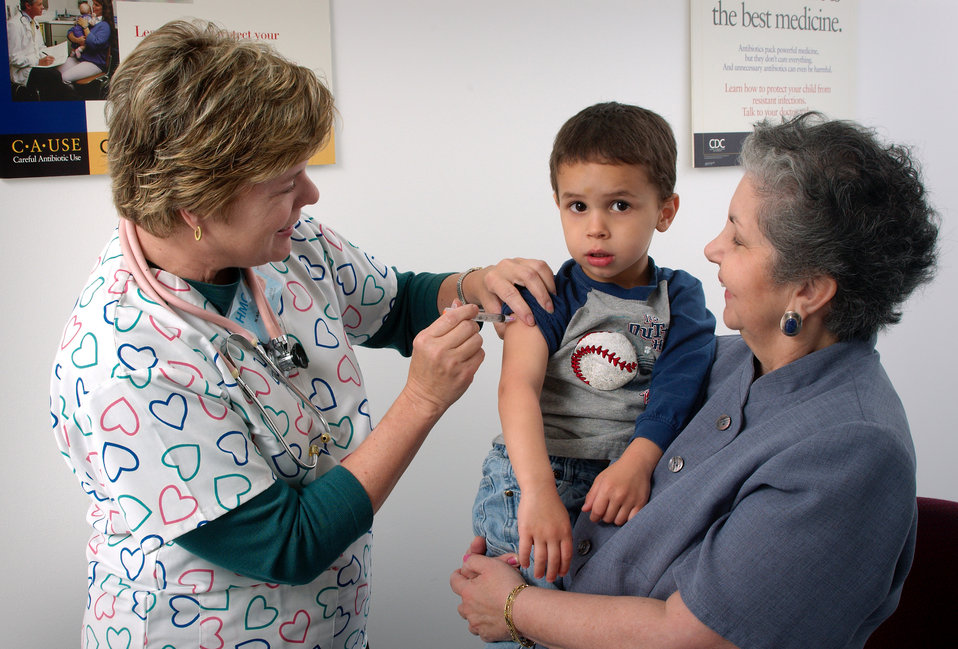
The 3-year old boy shown in this 2006 image, as well as PHIL 9299 and 9304, was receiving an immunization injection in his right shoulder.